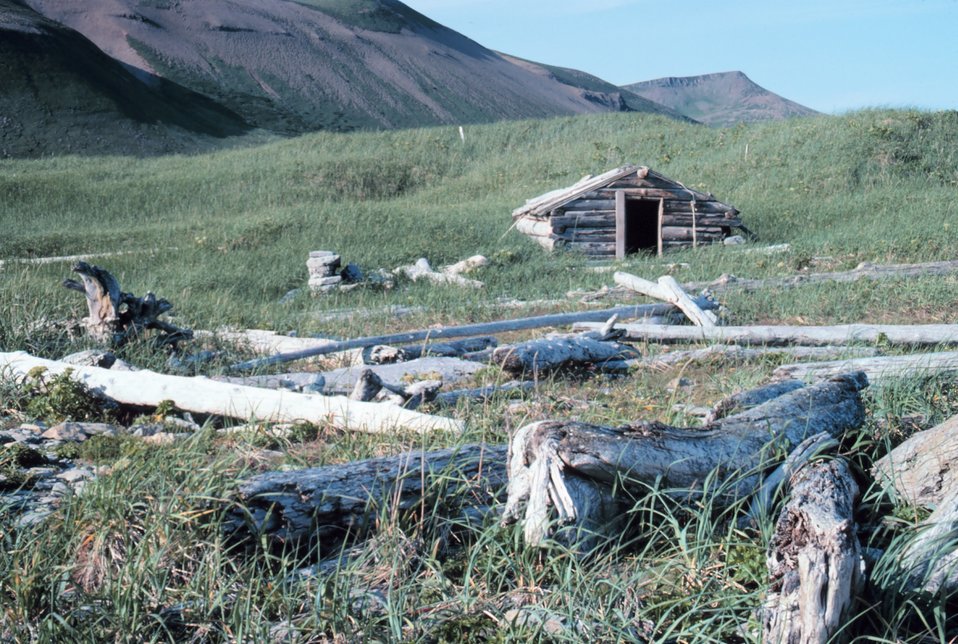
Old settler's cabin in Wide Bay - Shelikof Straits area